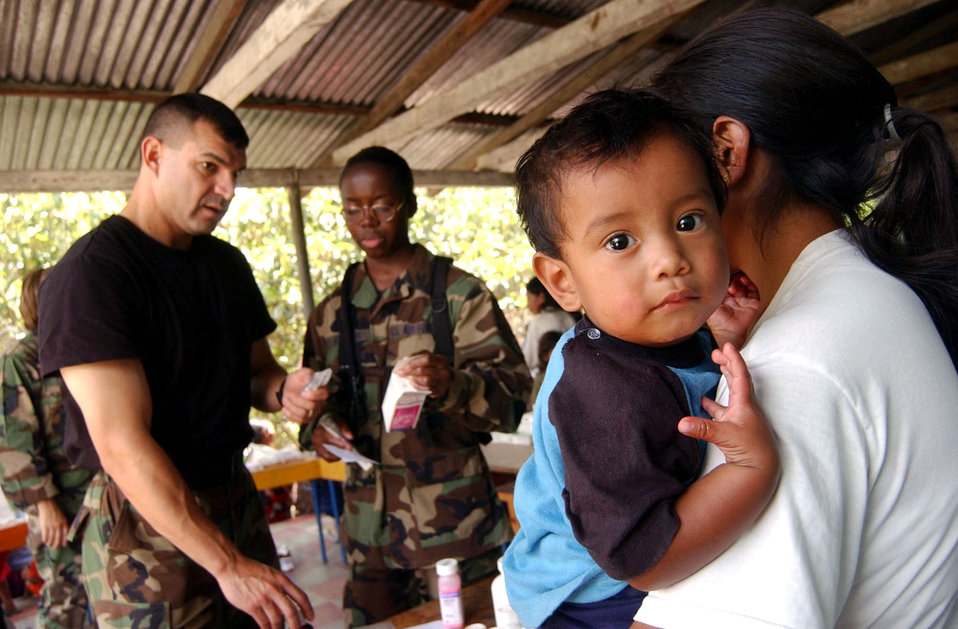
Medical element helps Honduran village

Master Sgt. Alvaro Magana, left, and Staff Sgt. Natasha Johnson explain to a mother the recommended dosage for her son while dispensing medication during a Medical Readiness Training Exercise June 29 in El Horno, Honduras. Sergeants Magana and Johnson are both from the Medical Element at Soto Cano Air Base, Honduras.